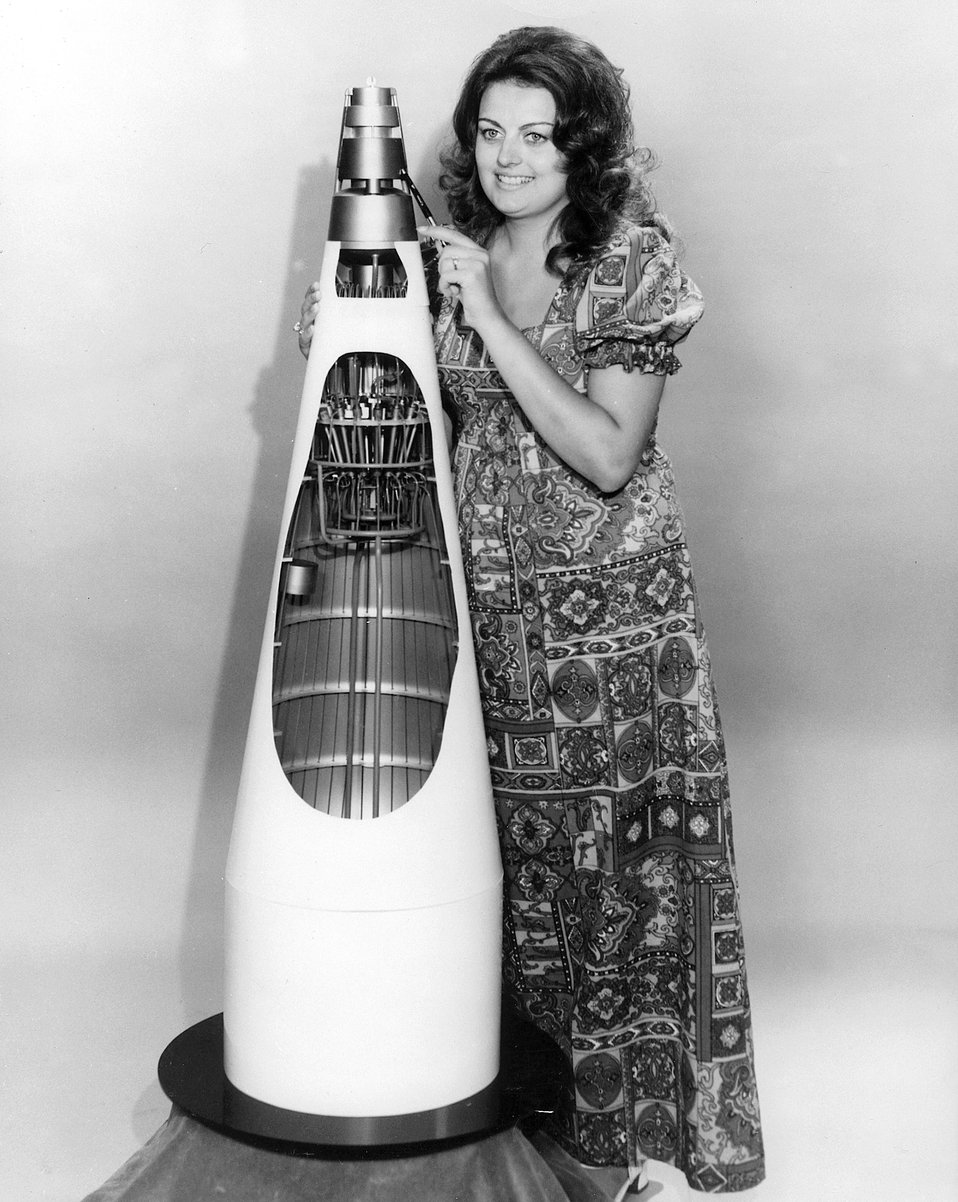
Electric power for use on unmanned spacecraft of the future could be supplied by nuclear reactor thermometric systems like the five kilowatt system which is being developed for the AEC and NASA by North American Rockwell's Atomic International Division